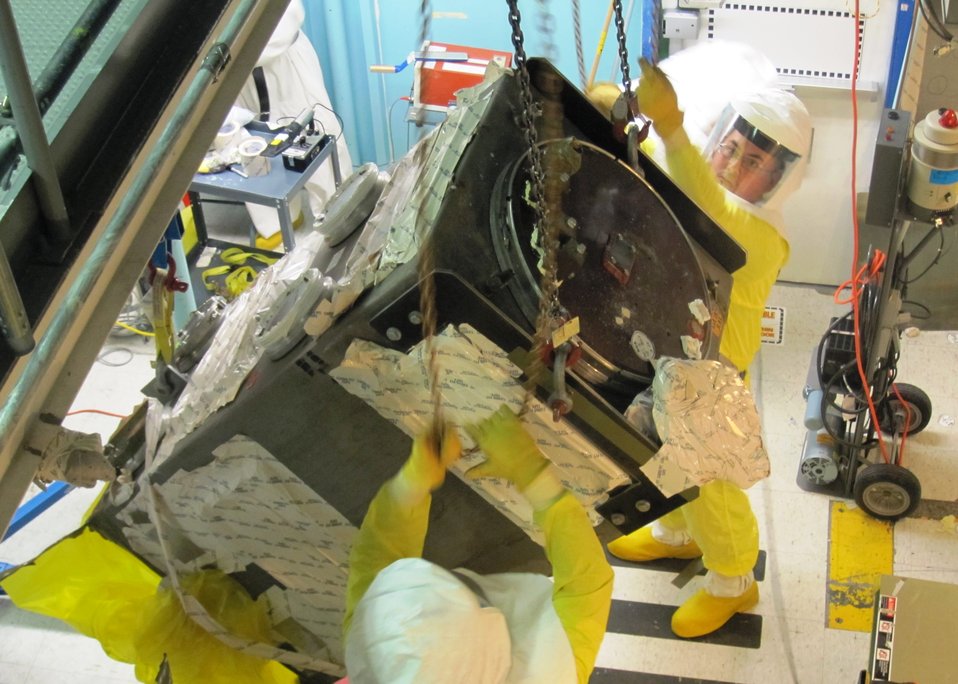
Recovery Act Funds Accelerate Cleanup, Reduce Footprint at Hanford Site

A section of a glove box is hoisted for removal from Hanford’s Plutonium Finishing Plant. Glove boxes are large, contaminated pieces of equipment that once supported plutonium production and processing.